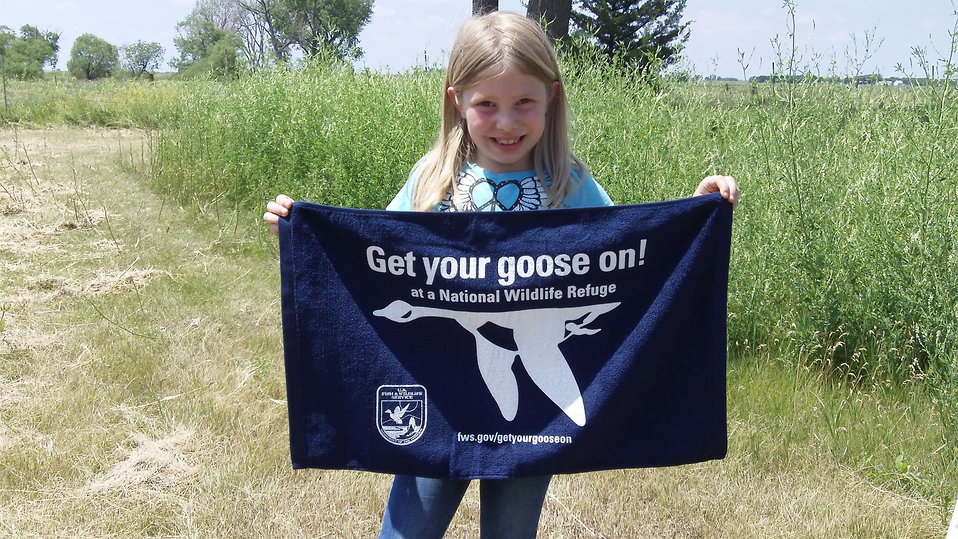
Get Your Goose On!

Photo taken at Huron Wetland Management District in east-central South Dakota.